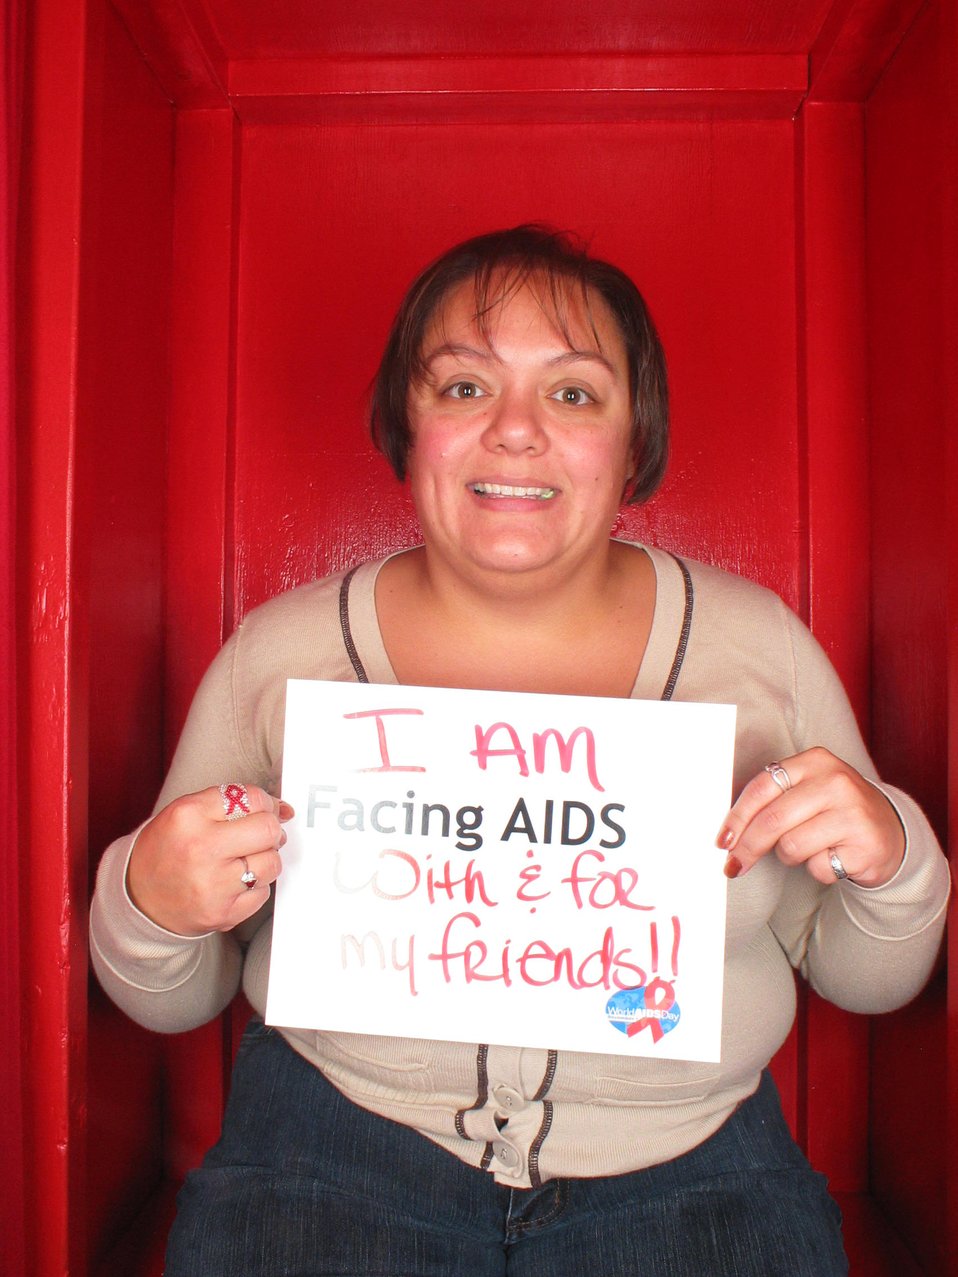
I am Facing AIDS with and for my friends!!